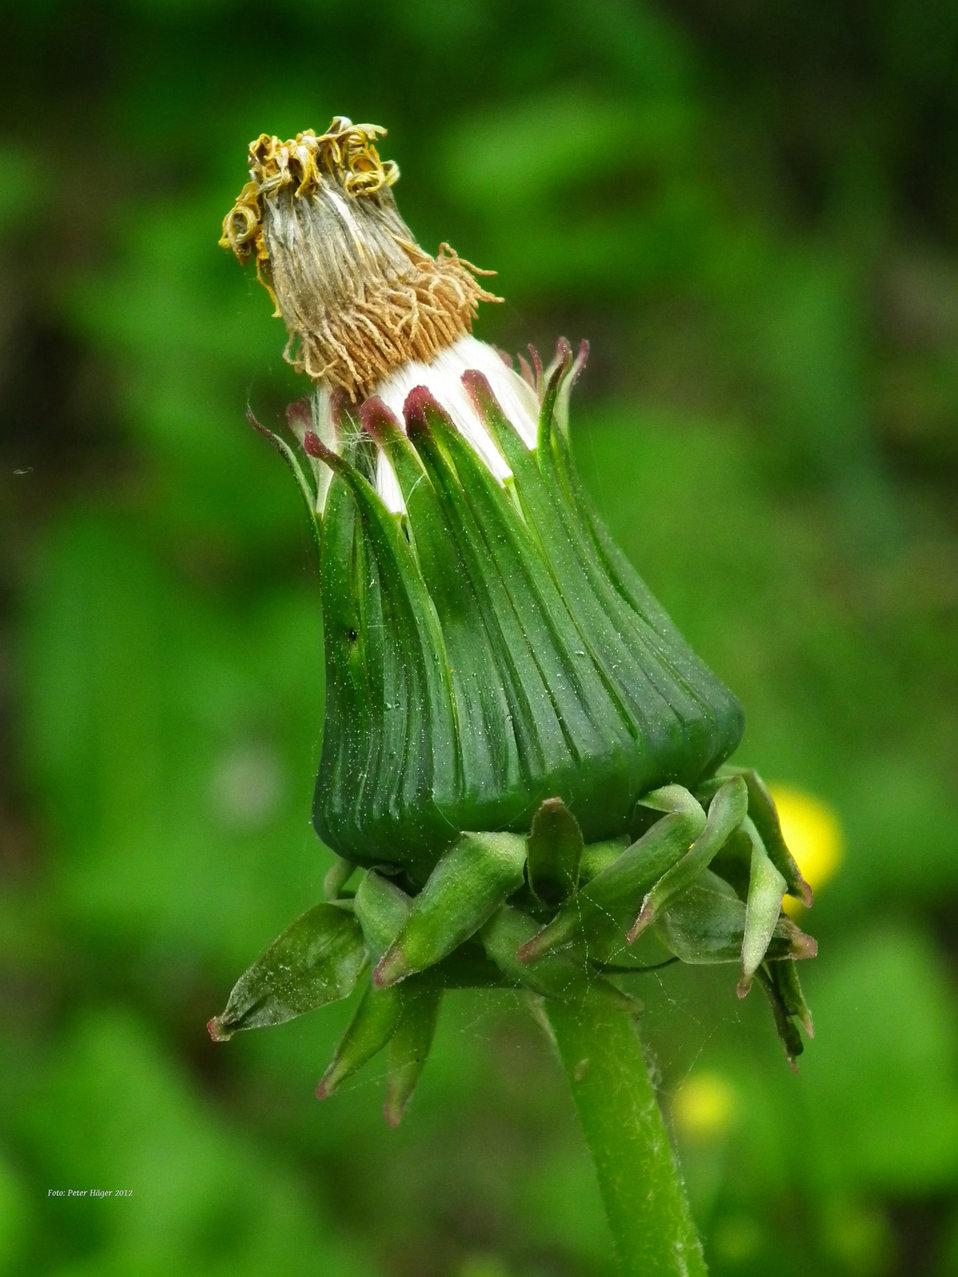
Overblown dandelion

Dandelion.